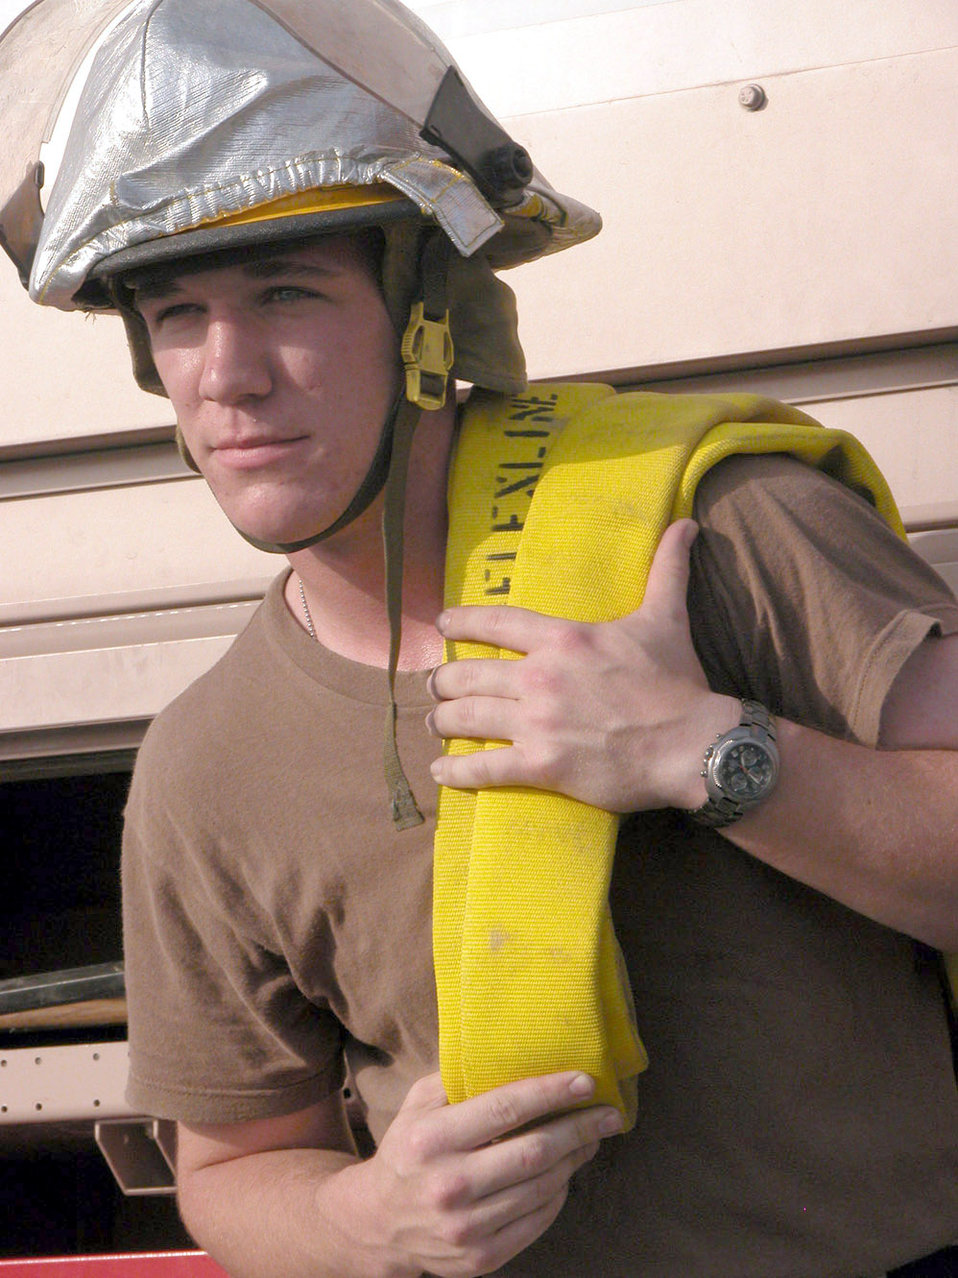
SOUTHWEST ASIA (AFPN) -- Airman 1st Class Daniel Lohman pulls a hose from a fire truck at a forward-deployed location. Airman Lohman is a firefighter assigned to the 379th Expeditionary Civil Engineer Squadron. He is deployed from Andrews Air Force Base, Md.